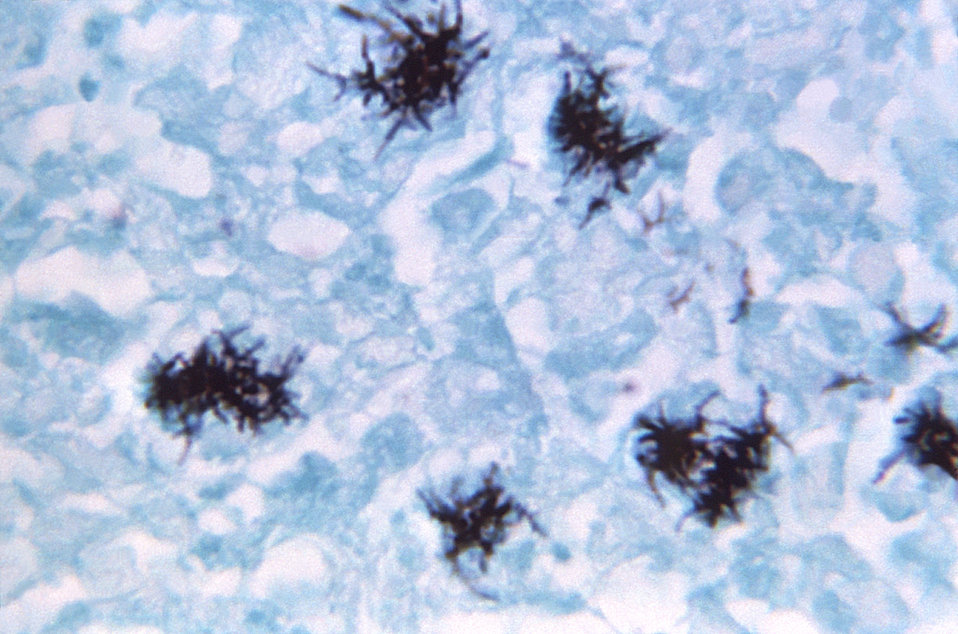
Magnified 1125X, this mehenamine silver-stained photomicrograph revealed some of the ultrastructural details associated with a specimen of thawed pus extracted from the jaw bone of a wild Dall sheep, Ovis dalli with a suspected case of actinomycosis. See PHIL 10804 for a gross pathologic view of the mandible from which this specimen was derived.